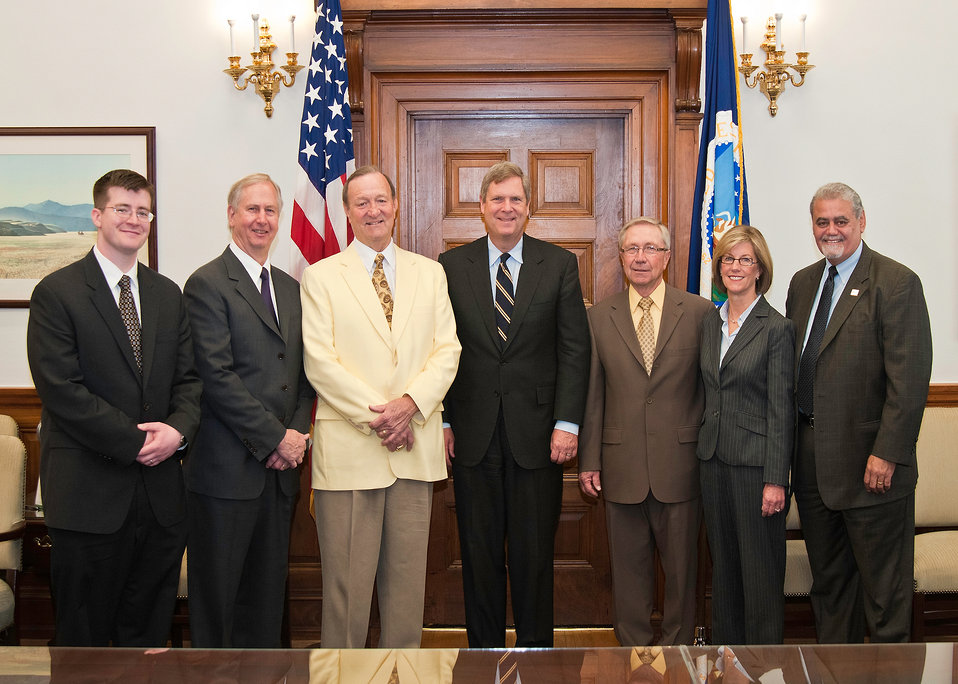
From left: Erik Johnson, Associate Legislative Director, National Association of Counties, Larry Naake, Executive Director, National Association of Counties, Dexter Payne, County Commissioner, Muskogee, Oklahoma, Agriculture Secretary Tom Vilsack, Don Larson, National Association of Counties, Brookings, South Dakota, Lu Barron, Board of Supervisors, Linn County Iowa, Cedar Rapids, Iowa and Edwin Rosado, Legislative Director, National Association of Counties. Agriculture Secretary Tom Vilsack met with the National Association of Counties Rural Action Caucus in Washington, DC, Thursday, April 7, 2011. NACO was in Washington visiting a variety of Federal Agencies in regard to federal programs. Their priority at the United States Department of Agriculture was programs associated with the reauthorization of the Farm Bill with respect to rural development programs.